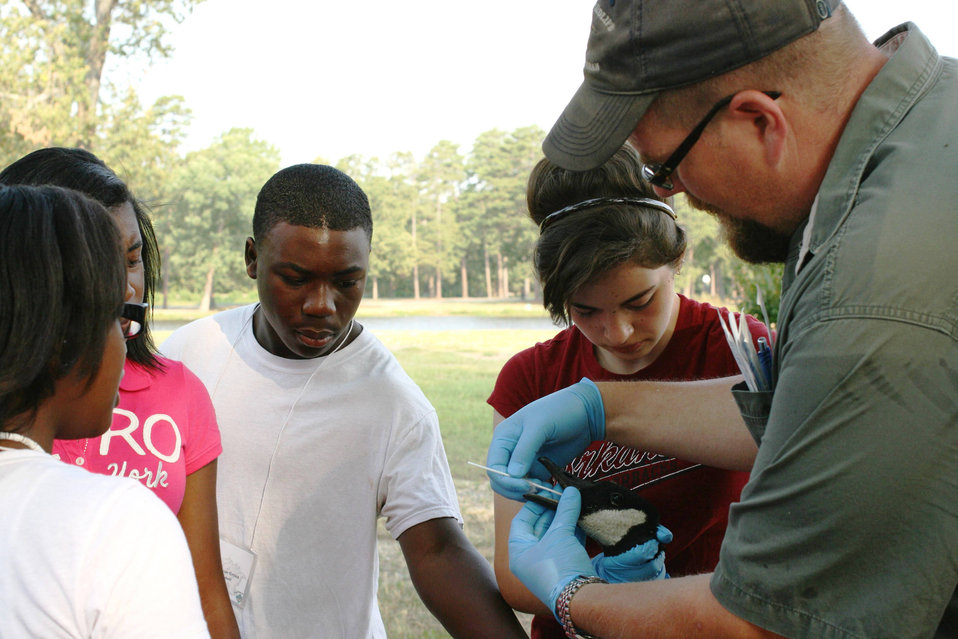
U.S. Department of Agriculture’s (USDA) Animal and Plant Health Inspection Service (APHIS) Arkansas Wildlife Services Disease Biologist Clint Turnage demonstrates sample collection techniques for disease surveillance to students in the APHIS Ag-Discovery Program through the University of Arkansas at Pine Bluffs, AR on July 30, 2012.